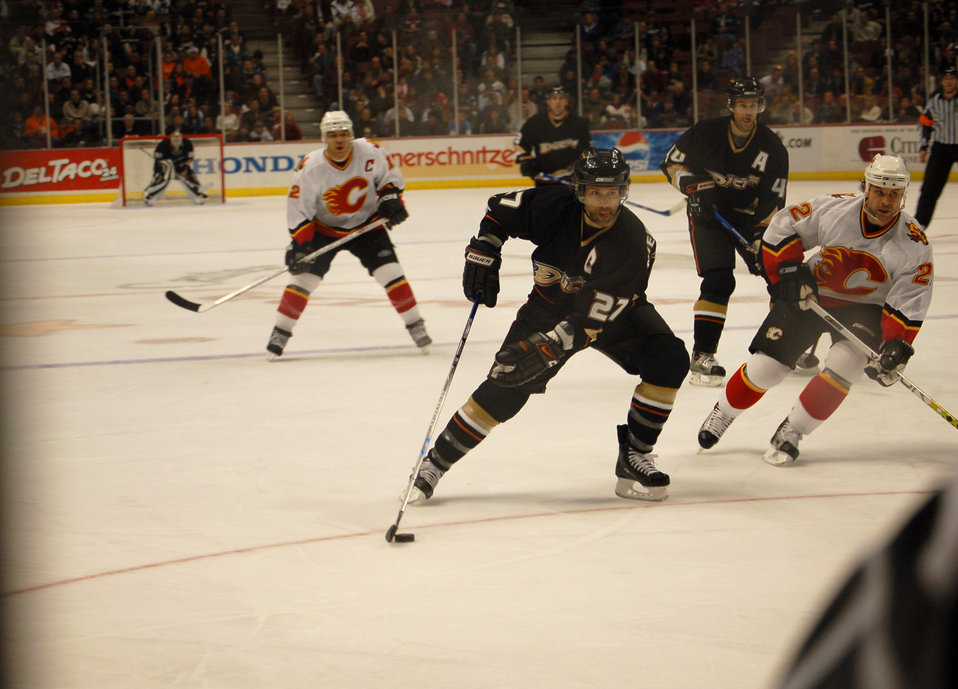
Magical weekend ends on ice

Anaheim Ducks Defenseman Scott Niedermayer looks to pass the puck Dec. 18 during a match against the Calgary Flames. The game was the final activity of the four-day Snowball Express event. The event was open to all military families who lost someone in the war on terrorism.